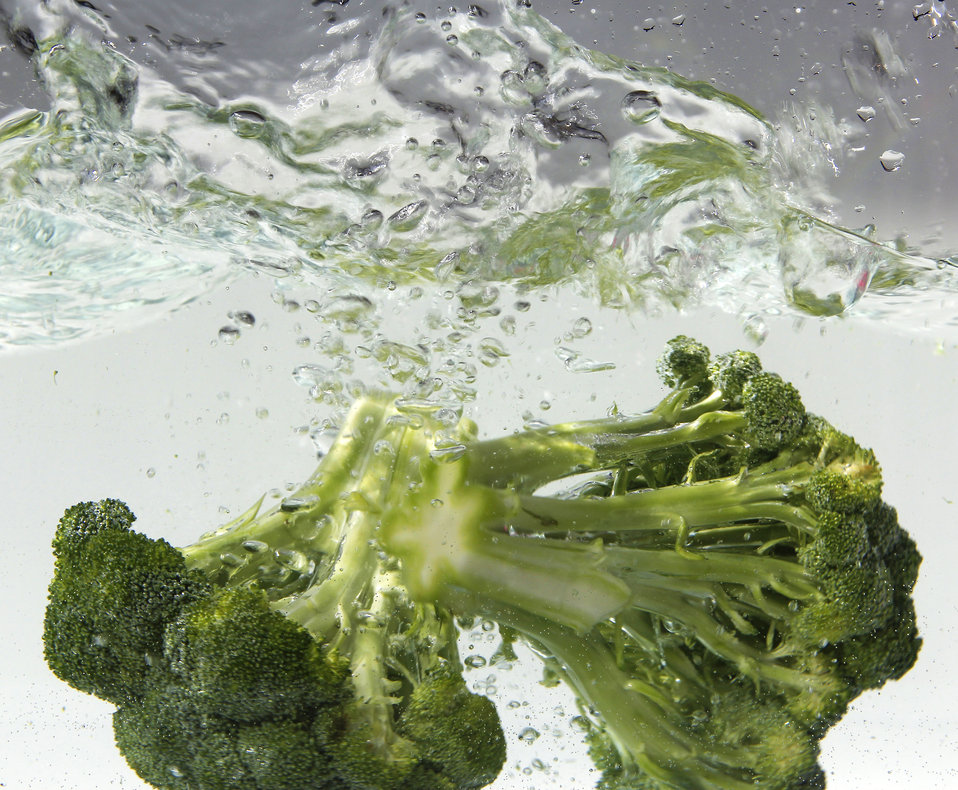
Dunked into a tub of clean water, these two fresh heads of green broccoli were undergoing a thorough cleansing prior to their addition to a healthy meal. Broccoli is a terrific source of vitamins A and C, as well as dietary fiber.